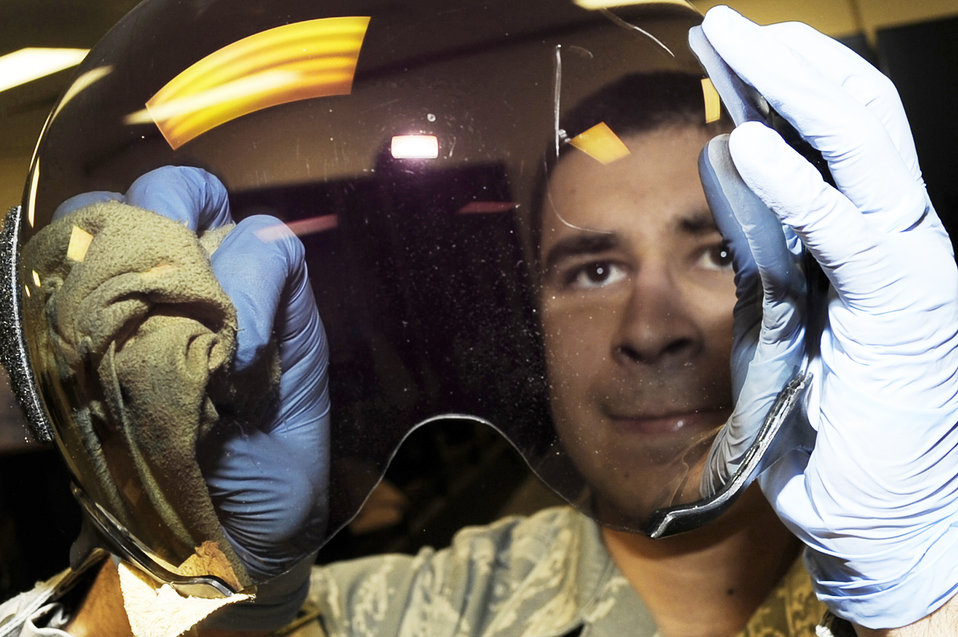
Airmen prepare for night mission at Bagram

Airman 1st Class Jeremy Betello, Life Support for the 455th Expeditionary Operation Support Squadron, cleans a lens before a flight Jan. 4, 2010, at Bagram Airfield, Afghanistan. Airman Betello is stationed at Shaw Air Force Base, S.C. and is from Austin, Texas.